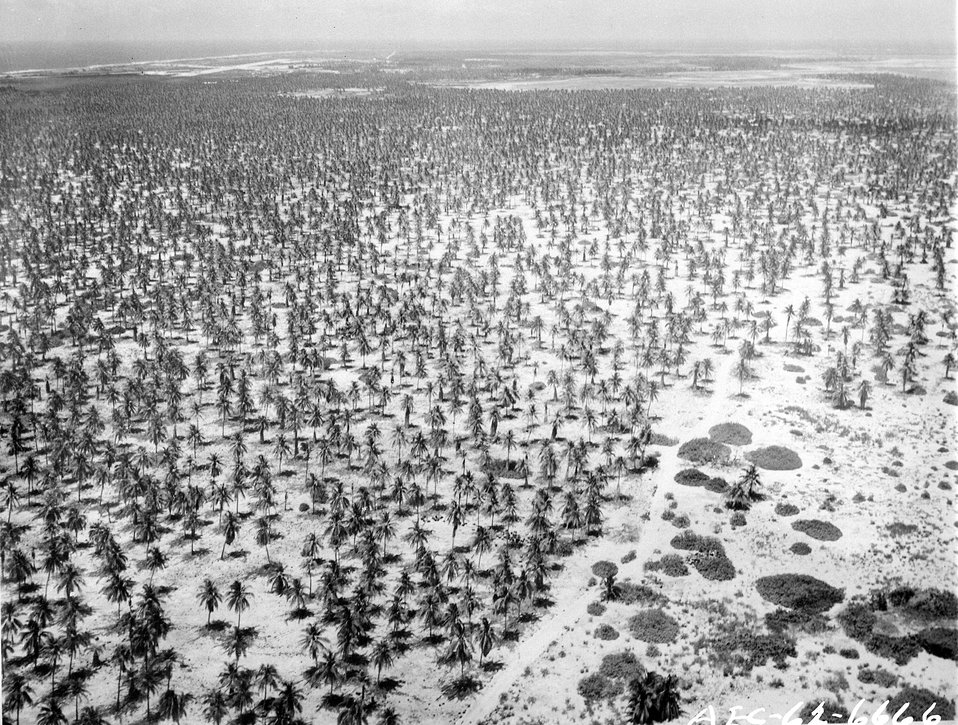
Christmas Island